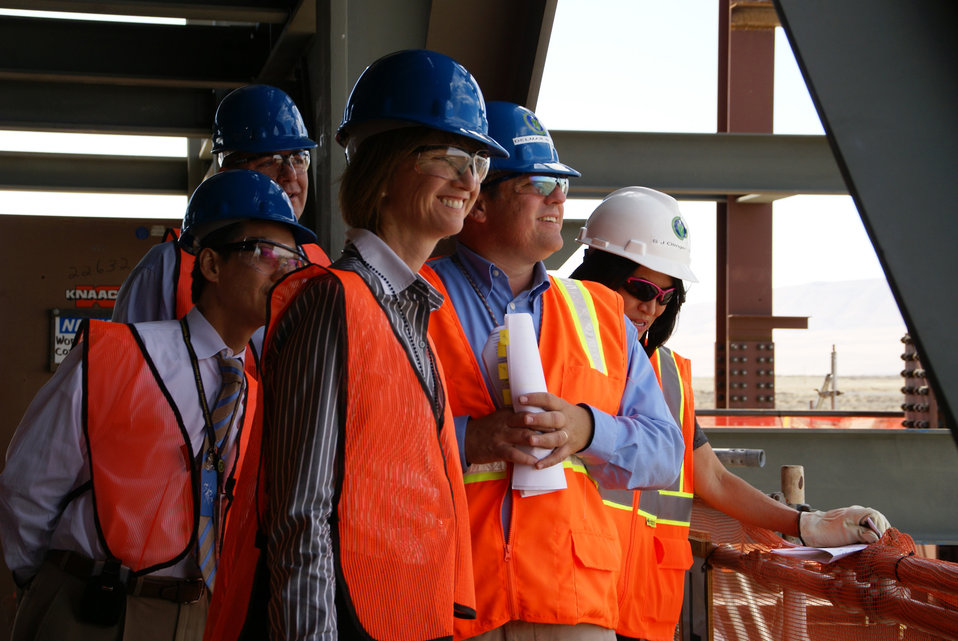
UNDERSECRETARY JOHNSON AT VIT PLANT 2009

Former DOE Undersecretary Kristina Johnson tours the ongoing construction of the Waste Treatment Plant at Hanford.